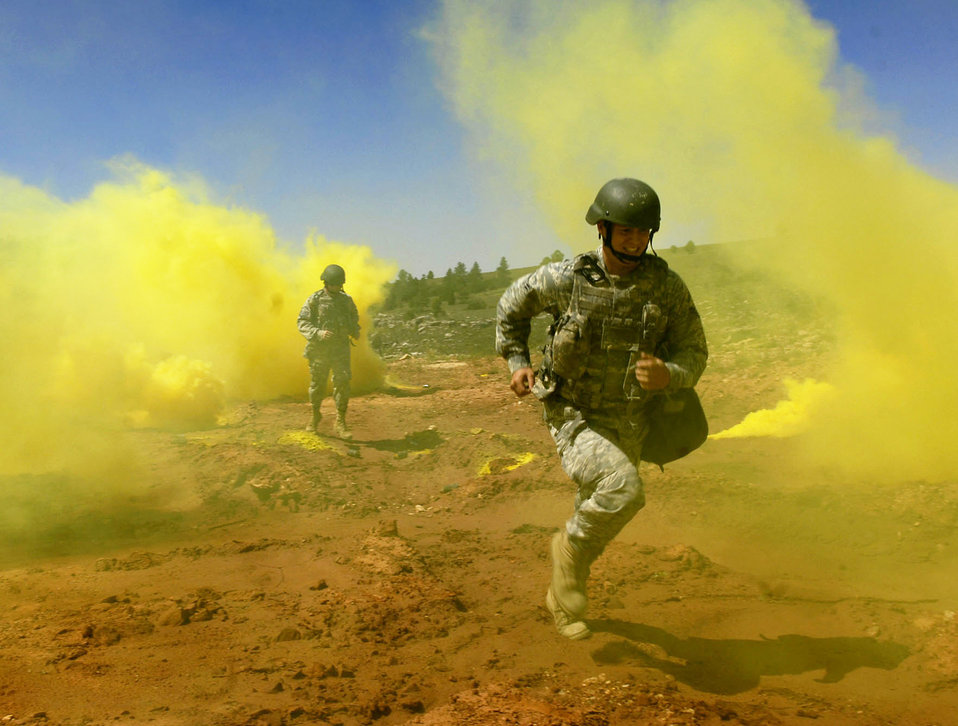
Go for cover!

Airmen from F.E. Warren AFB, Wyo., set off smoke bombs to evade enemy combatants during the Road Warrior exercise at Camp Guernsey Wyo. The joint exercise focuses on advanced marksmanship and convoy tactics and procedures for Air Force Space Command's Security Forces in charge of transporting intercontinental ballistic missile assets. The Airmen are assigned to the 790th Missile Security Forces Squadron.